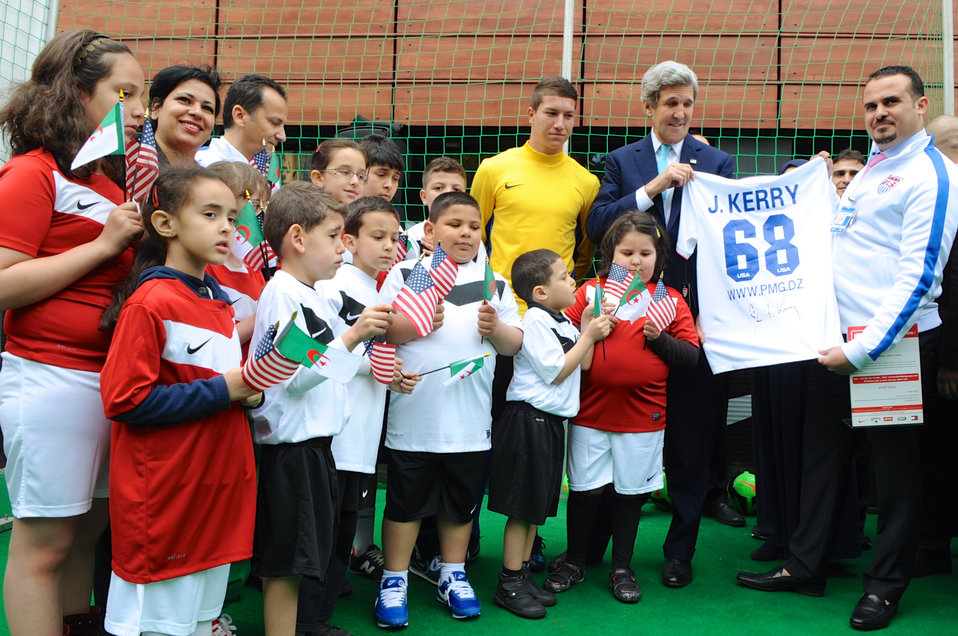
Secretary Kerry Models No. 68 Team U.S.A. World Cup Soccer Jersey in Algiers

U.S. Secretary of State John Kerry shows off the No. 68 Team USA World Cup jersey, signifying his term as the 68th Secretary of State, after it was presented to him by Nike executives following a State Department Sports Diplomacy program at the shoemaker's flagship store in Algiers -- the largest in the African continent -- on April 3, 2014.